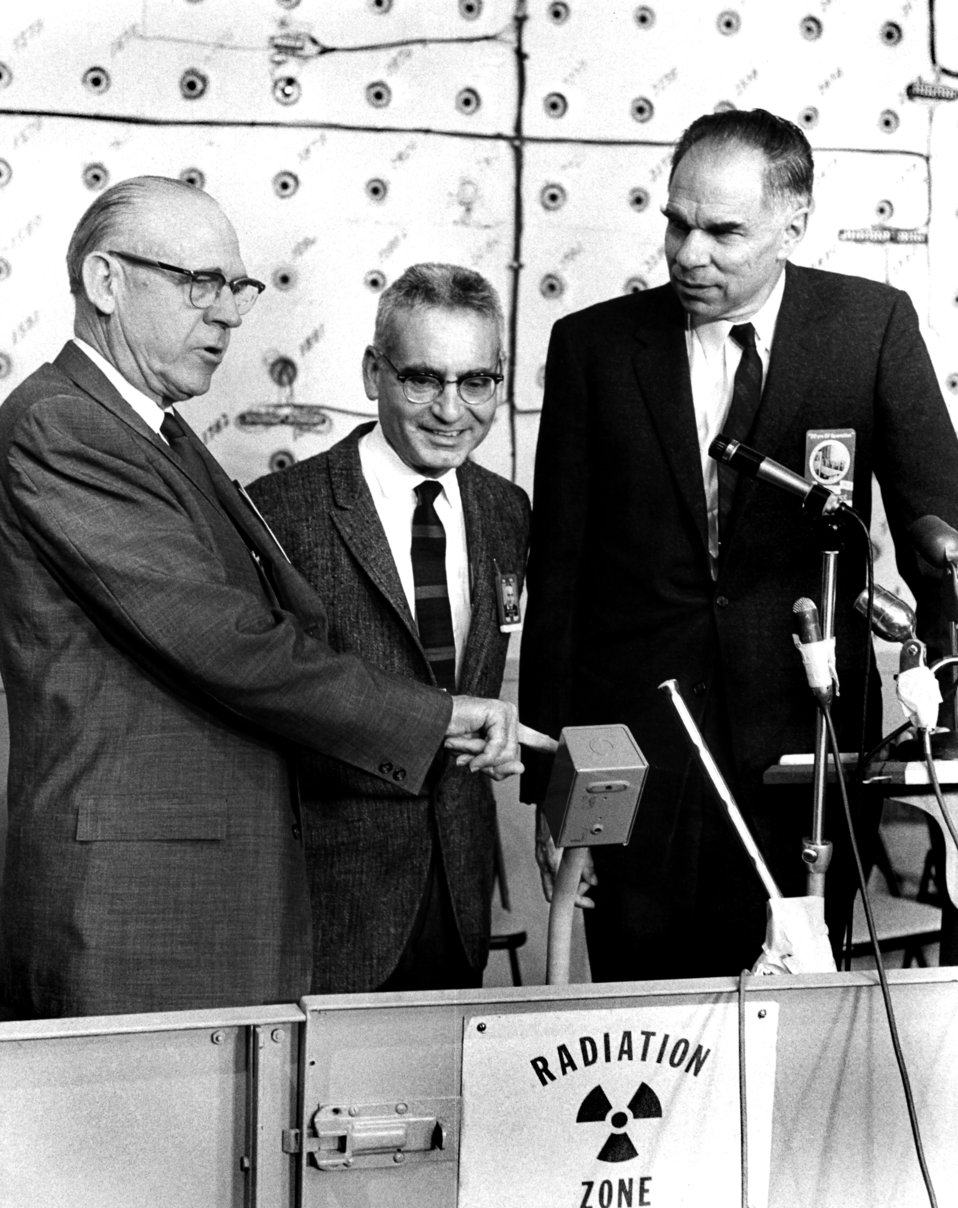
Graphite Reactor Closing Ceremony ORNL Oak Ridge 1963

63-1230-22 DOE Photo Ed Westcott 11-4-1963 Oak Ridge Tennessee